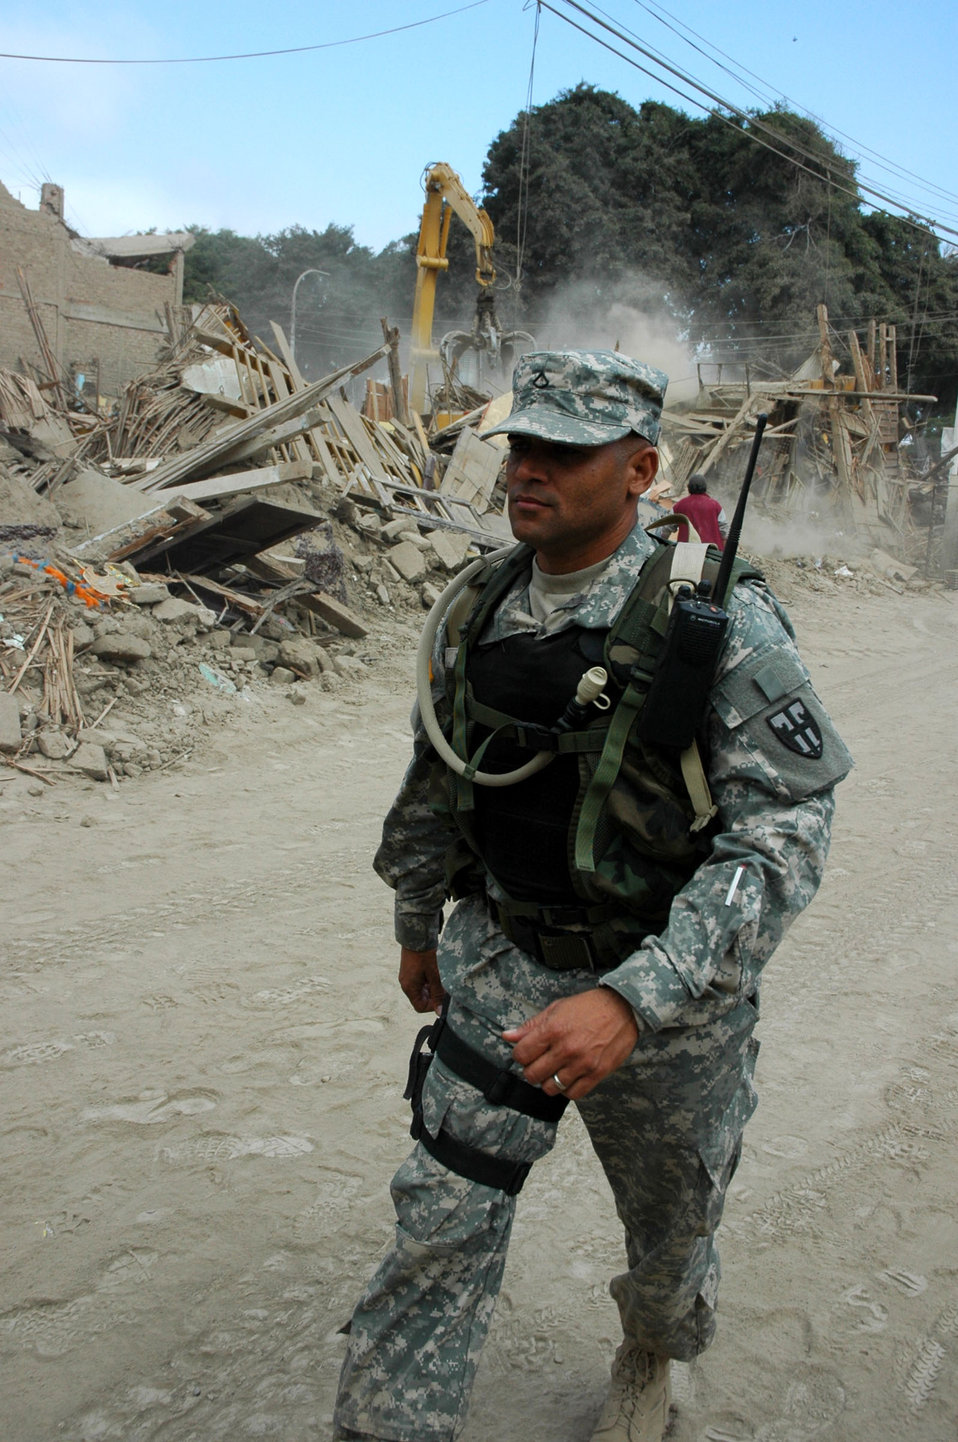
Task force treats more than 500 Peruvian patients

Army Private 1st Class David Torres observes the damage in Pisco, Peru, Aug. 19 following the 8.0 magnitude earthquake which struck the region Aug. 15. A task force from Joint Task Force-Bravo at Soto Cano Air Base, Honduras, traveled to Peru to provide medical humanitarian relief following the disaster. Private Torres is a security forces member with JTF-B.